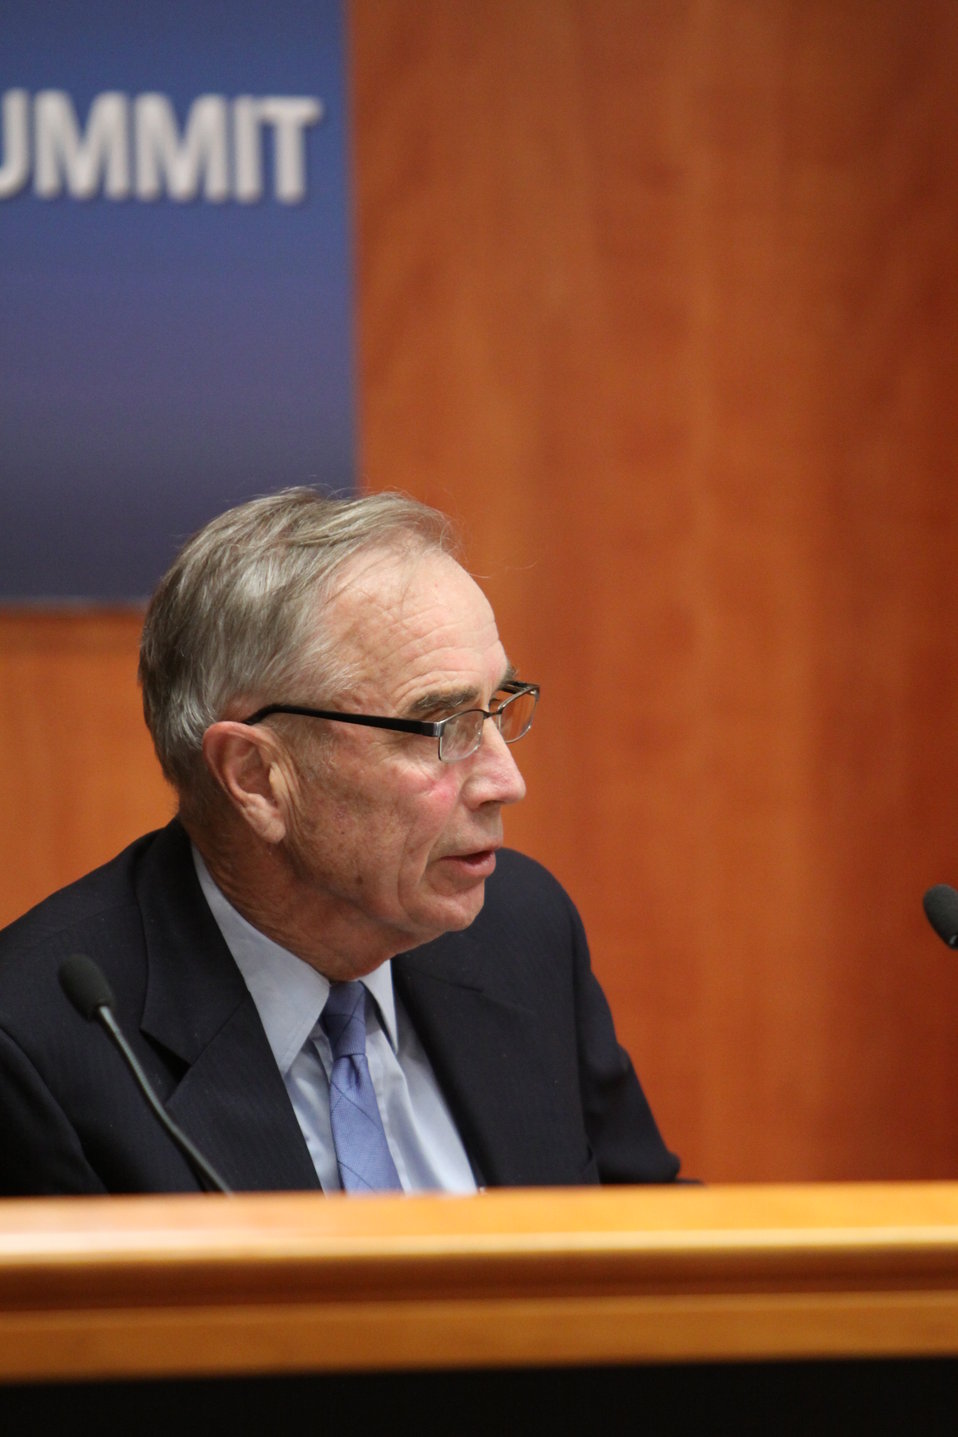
Jonathan Blake, Covington and Burling

FCC Policy Solutions to Spectrum Demand Panel